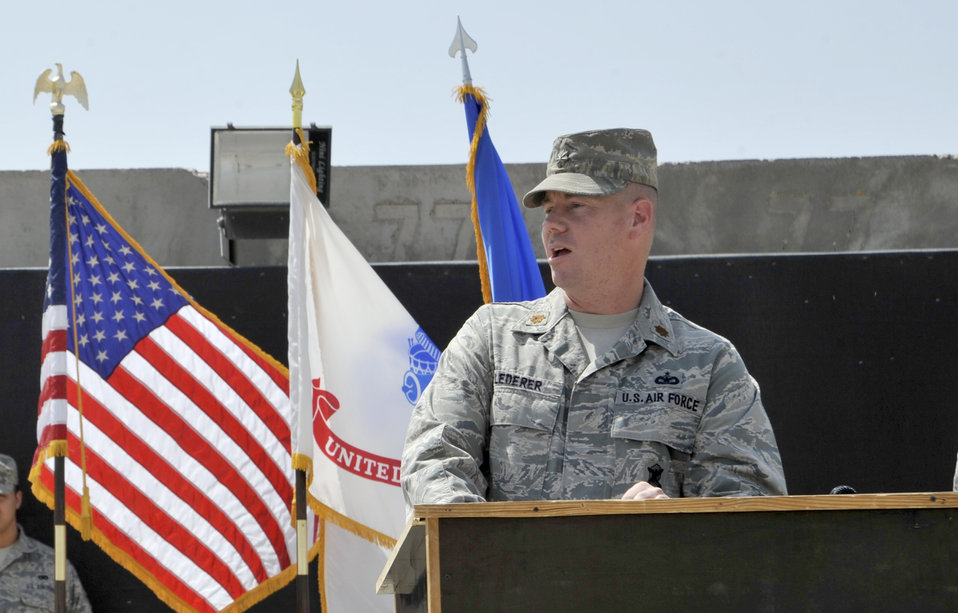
Police transition team

Maj. David Lederer speaks to Airmen and Soldiers during the deactivation of the 732nd Expeditionary Security Forces Squadron, Det. 2, and the transfer of authority of the police transition team mission to the Army's 94th Military Police Company July 26, 2010, at Camp Stryker, Iraq. Major Lederer is the 732nd ESFS, Det. 2, commander.